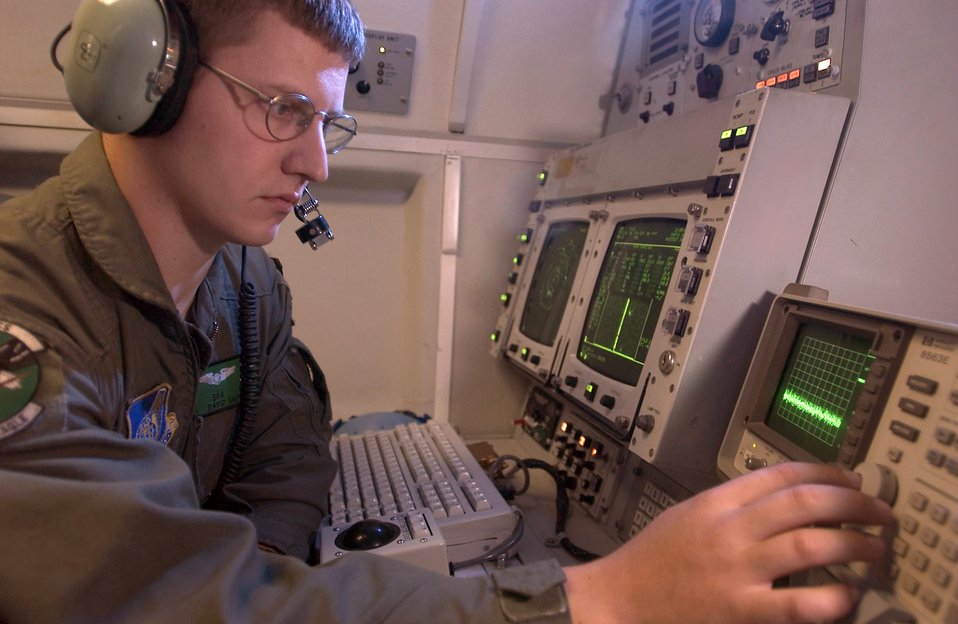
Air surveillance

ELMENDORF AIR FORCE BASE, Alaska -- Senior Airman David Shipman checks radar interference on a spectrum analyzer Aug. 16 during Alaska Shield/Northern Edge 05. The exercise is the largest homeland defense/homeland security exercise conducted in Alaska. It is an opportunity within the state to exercise an integrated local, state and federal government response to a series of simulated emergencies. Airman Shipman is a radar technician with the 962nd Airborne Air Control Squadron.